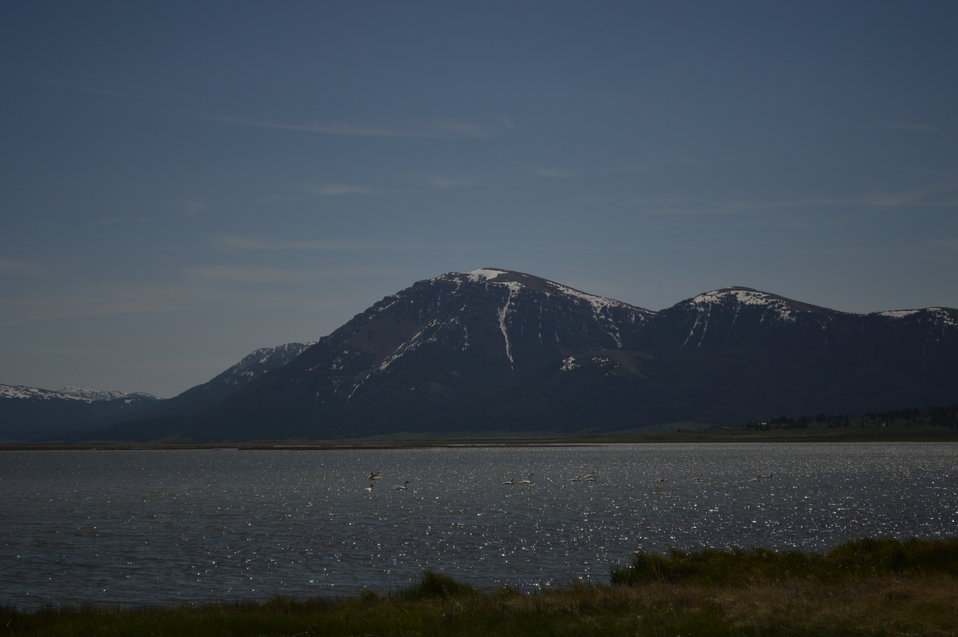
Regional Leadership Visit to Montana 2014